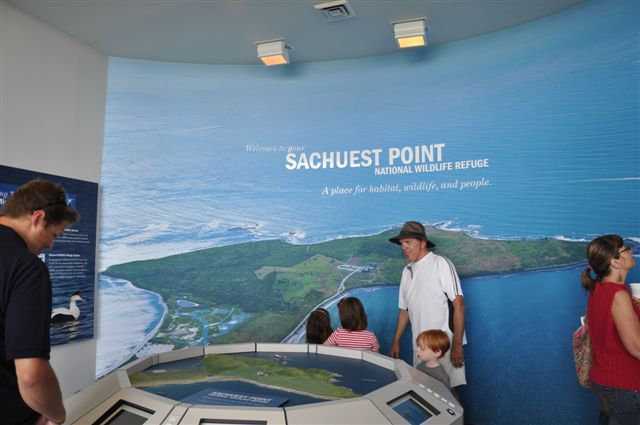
Welcome kiosk at the visitor center

A welcome kiosk at the Sachuest Point National Wildlife Refuge visitor center, which re-opened with newly renovated exhibits on August 24, 2012.